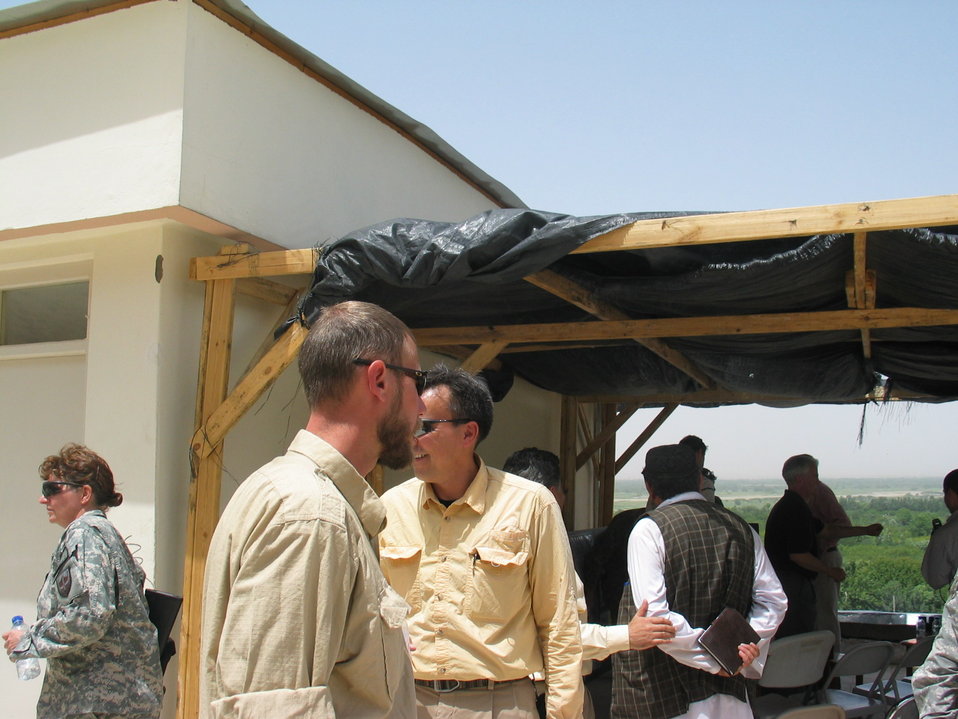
CODEL Berman